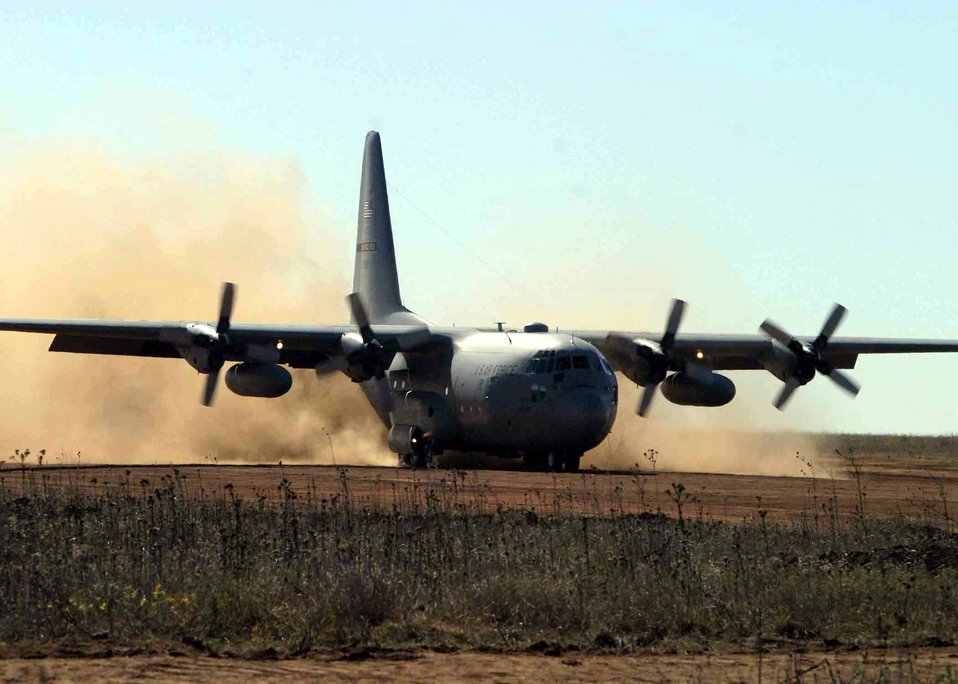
Fast fire

FORT SILL, Okla. -- A C-130 Hercules loaded with a High Mobility Artillery Rocket System from the Redstone Arsenal in Huntsville, Ala., lands here Nov. 19 on a newly developed assault landing zone. Cut from the rugged terrain in less than 30 days, the 3,500-foot landing zone represents the worst-case scenario for landing the rocket launcher in combat situations. The exercise was a joint effort of soldiers, airmen and Marines.